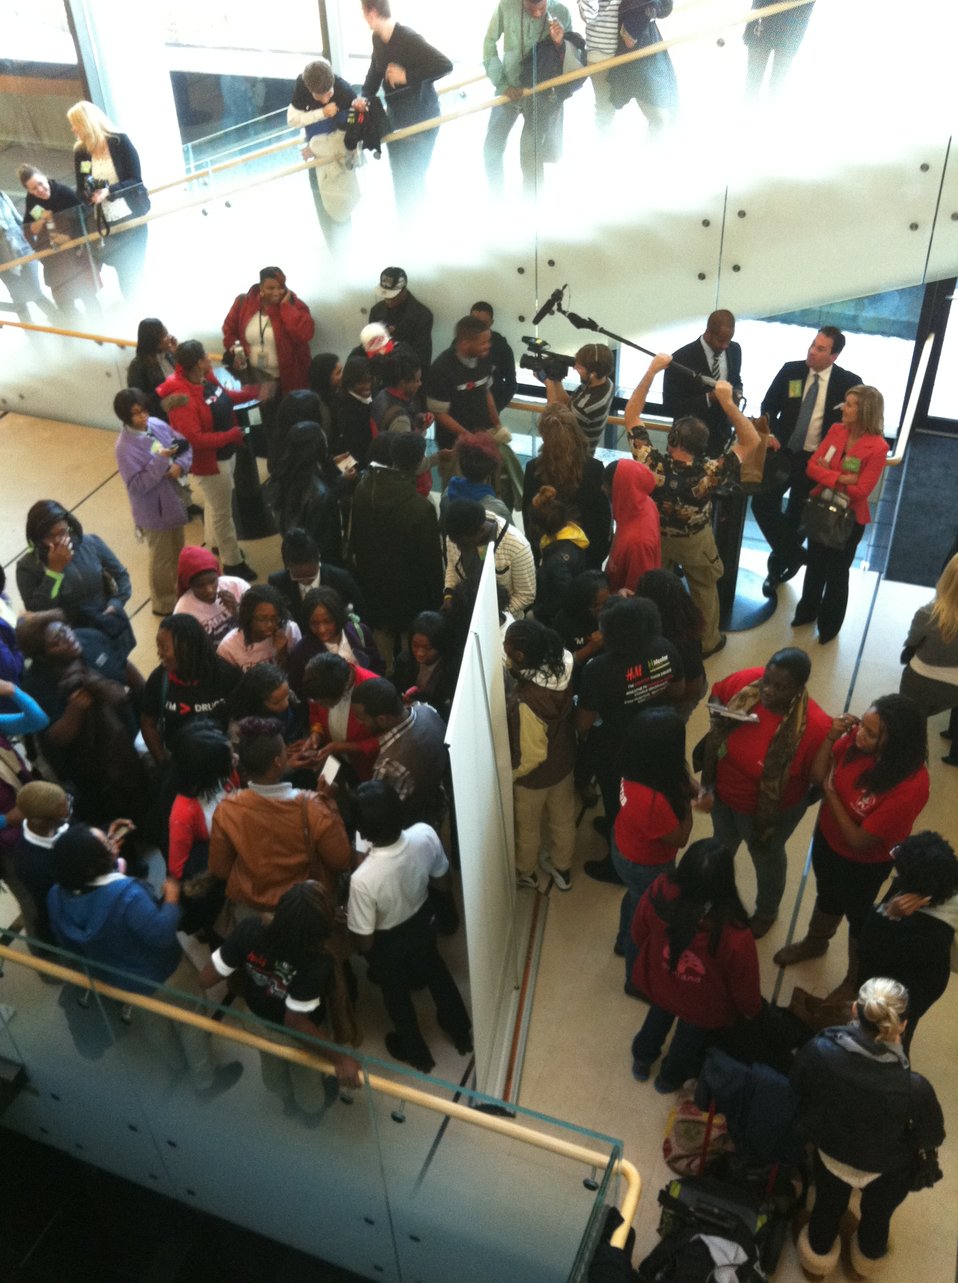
Mentor 21